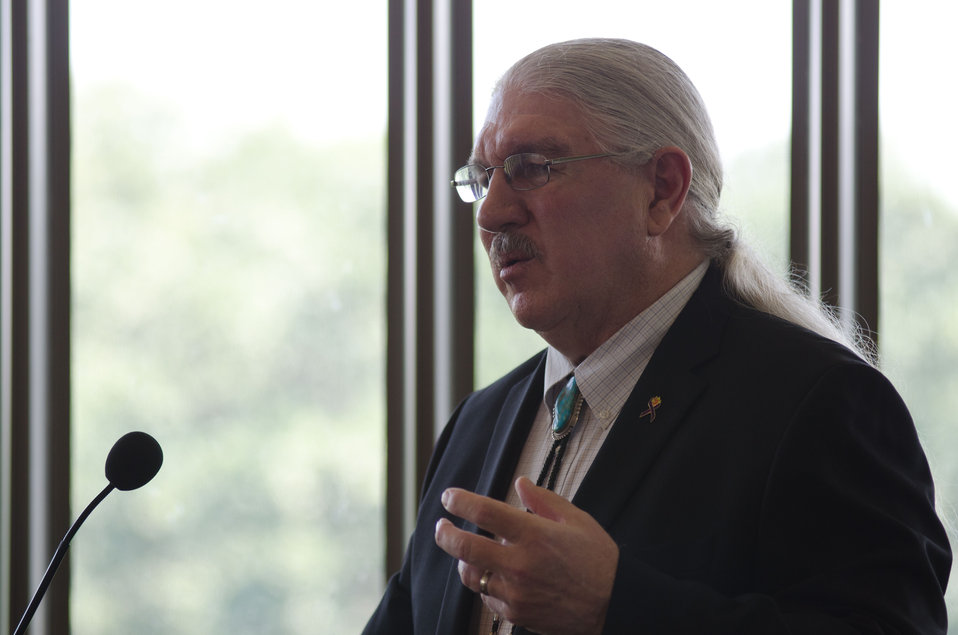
U.S. Department of Agriculture (USDA) Deputy Under Secretary Natural Resources and Environment (NRE) Arthur “Butch” Blazer speaks during the final day of the first business meeting of USDA’s Council for Native American Farming and Ranching (CNAFR) held at the National Museum of the American Indian in Washington, D.C. on Tuesday, Aug. 14, 2012. CNAFR was created to advise the Secretary on ways to eliminate barriers to participation for Native American Farmers and Ranchers in USDA programs. The Council was established as part of the Keepseagle settlement, and is conducted under the oversight of USDA's Office of Tribal Relations under the Office of the Secretary of Agriculture.